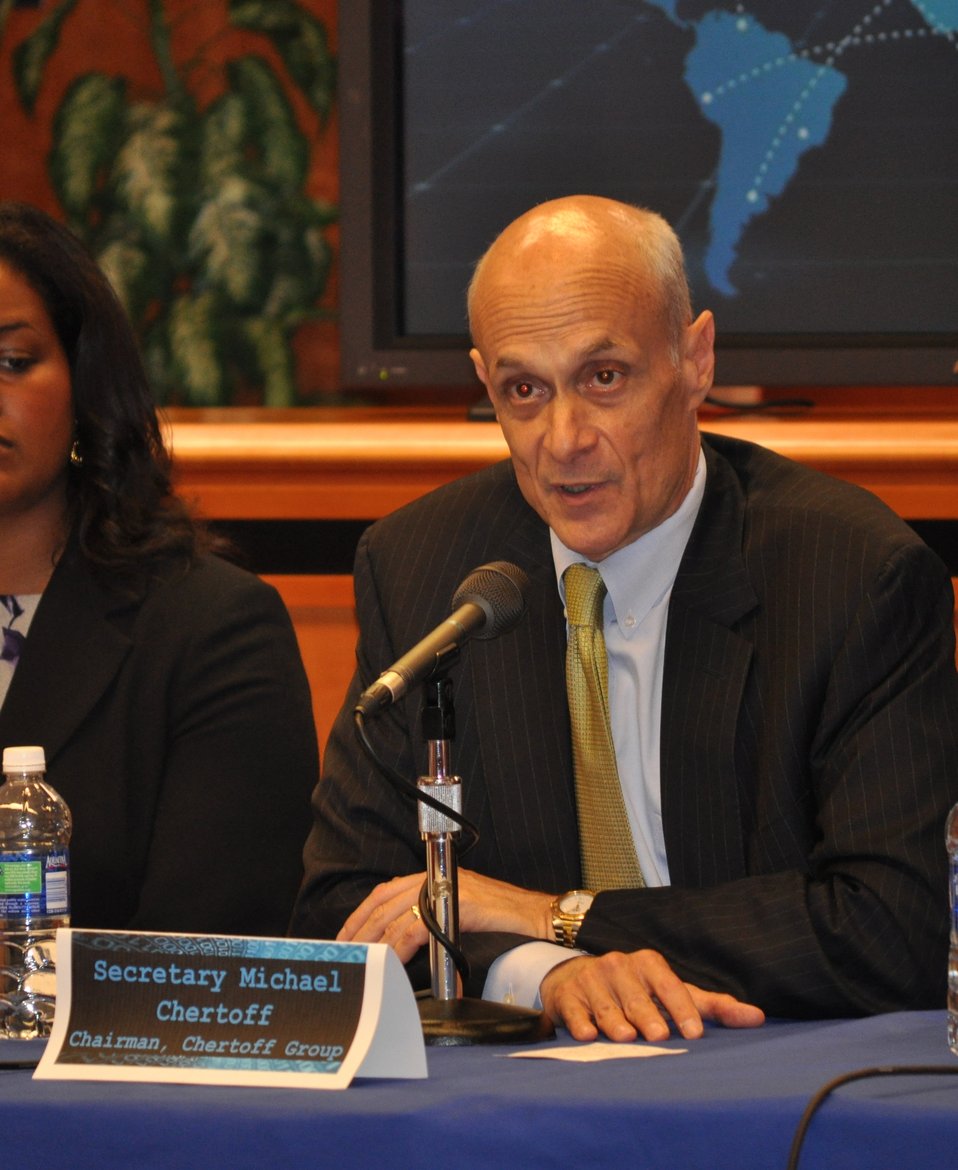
Cybersecurity 5-16

Cybersecurity for Small Business Roundtable; May 16, 2011